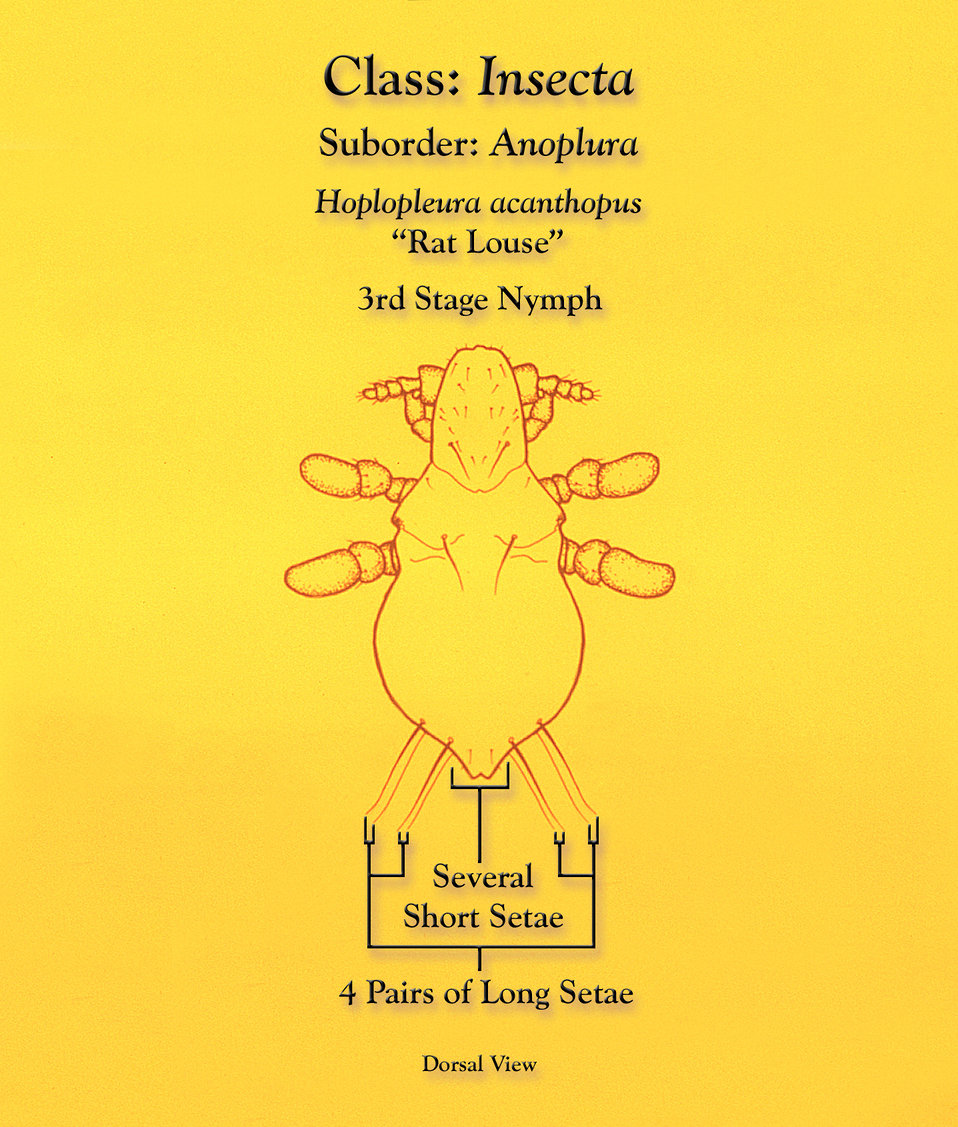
This illustration depicts the morphologic characteristics found to be displayed by the Anopleural sucking 'rat louse', Hoplopleura acanthopus during its third nymphal stage of development.